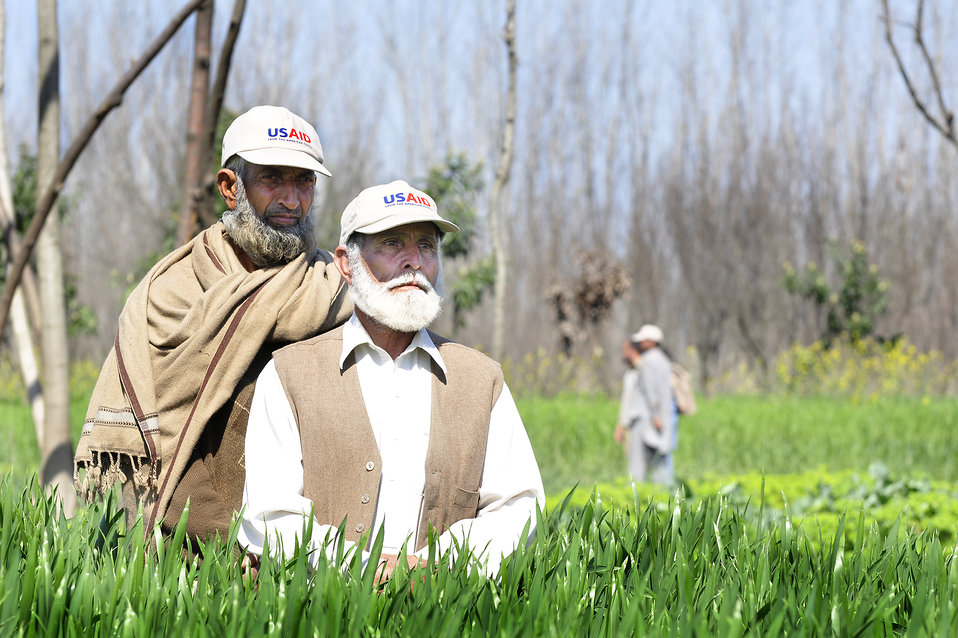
2011 March: USAID's Agricultural Recovery Program in 22 districts of Khyber Pakhtunkhwa, Punjab and Balochistan is an excellent example of the impact US development assistance can have. We have helped more than 500,000 farmers salvage the winter planting season and livestock after the floods. As a result, wheat farmers have nearly doubled their harvests. More than 5 million people have benefited. These photos show progress of the USAID Agricultural Recovery Project in Khyber Pakhtunkhwa.